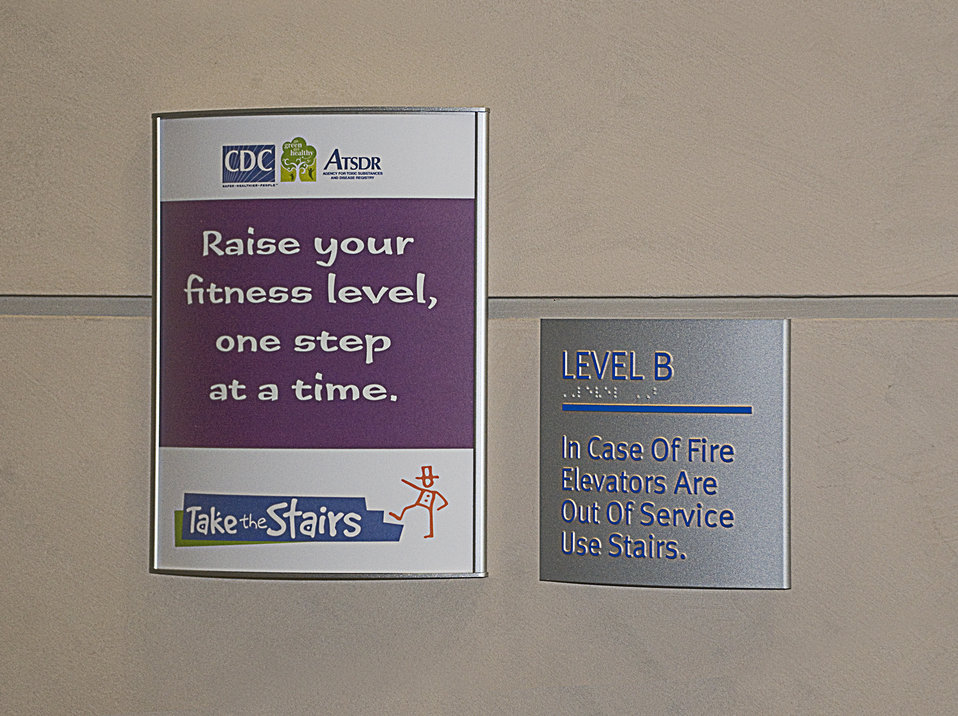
Here are two examples of signs placed throughout the facilities of the Centers for Disease Control (CDC) in Atlanta, Georgia, encouraging employees and vistors to make use of the stairways instead of using mechanized means of transport, i.e., elevators.